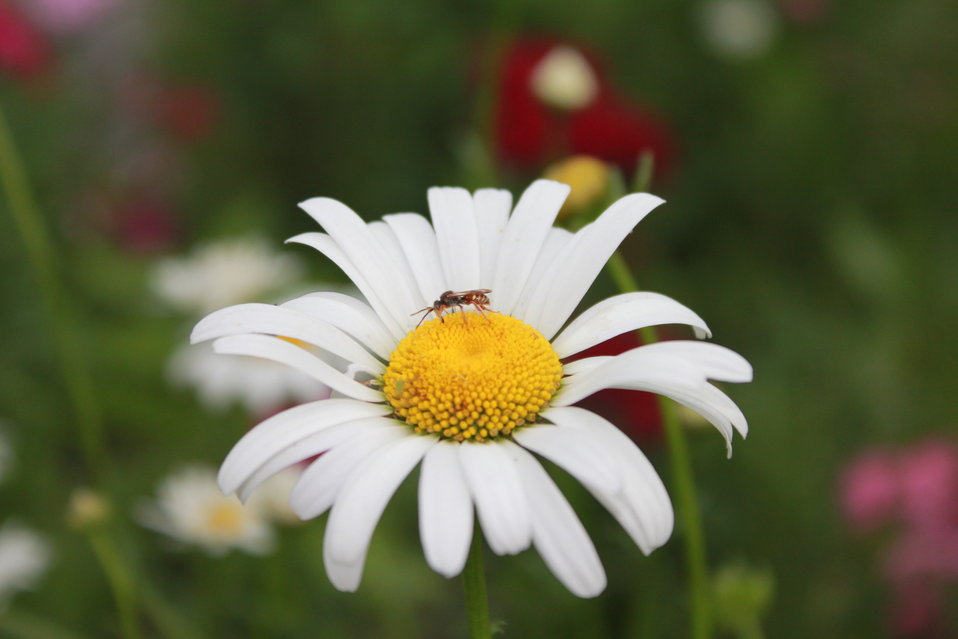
Daisy

A daisy with a pollinator on it in the pollinator garden outside the Regional Office in Hadley, MA.